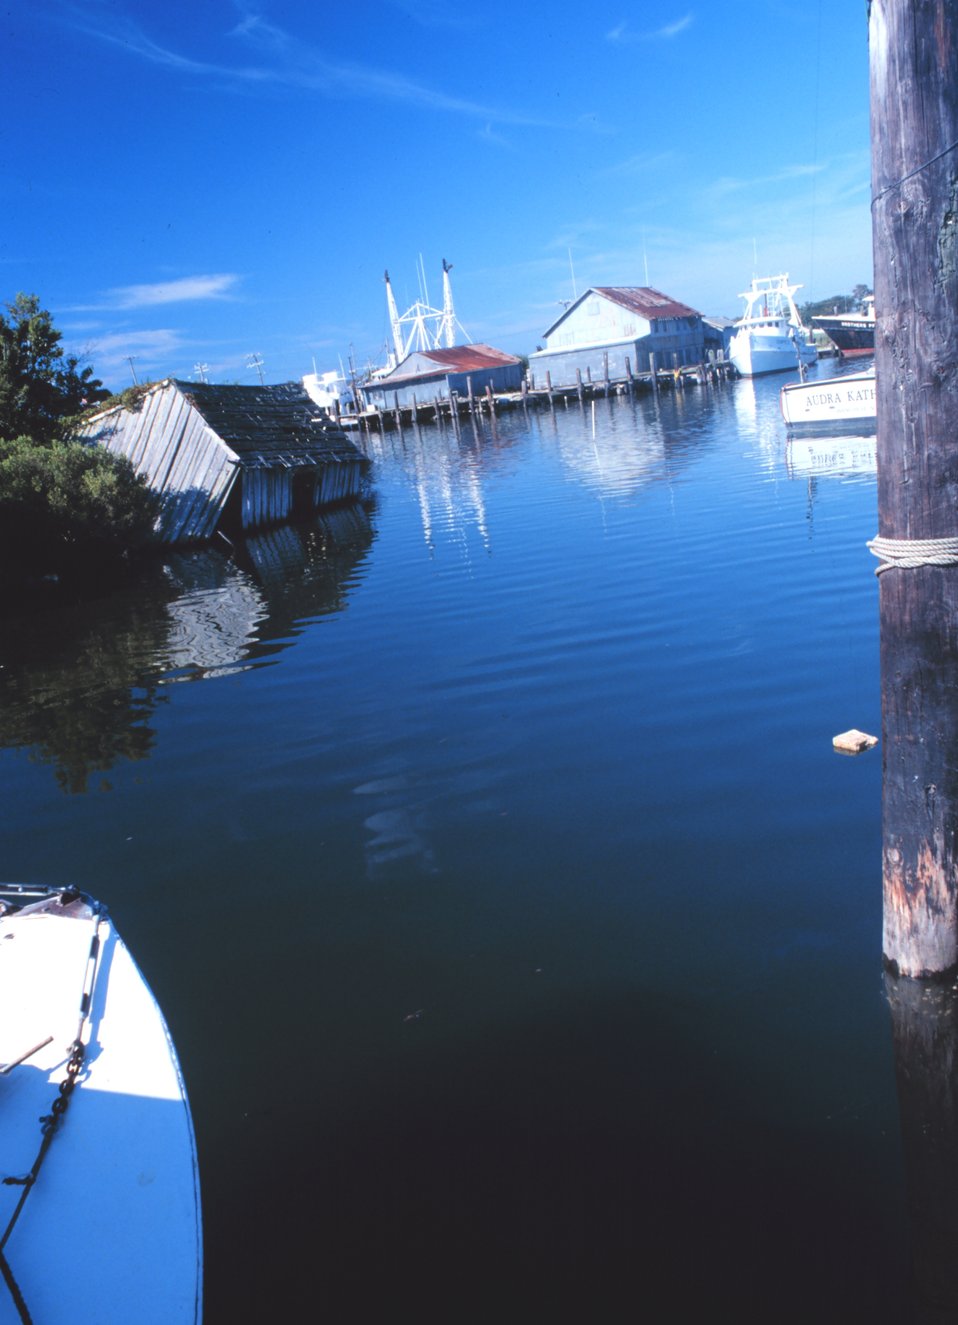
A view of the fishing port